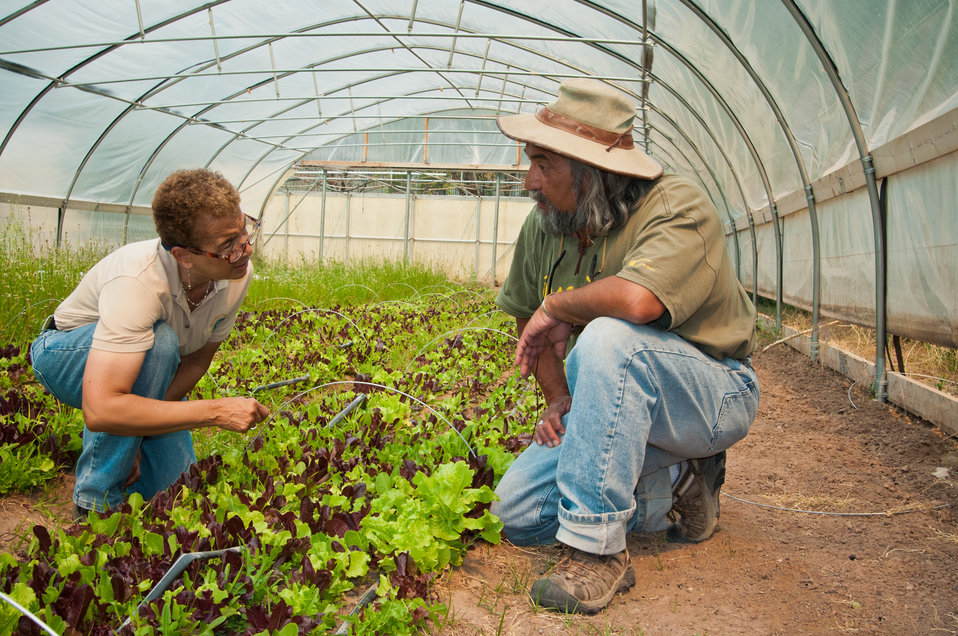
U.S. Department of Agriculture (USDA) Regional StrikeTeam Coordinator Sharon Nance and Espanola, NM organic farmer Don Bustos talk about the benefits of the USDA’s StrikeForce Initiative on Tuesday, Jun. 11, 2013. The USDA StrikeForce Initiative in cooperation with public and private organizations offers many economic grants, loans and conservation contracts through Rural Development and the Natural Resources of Conservation Service for areas of rural America with a high percentage of people living below the poverty level and considered economically distressed.